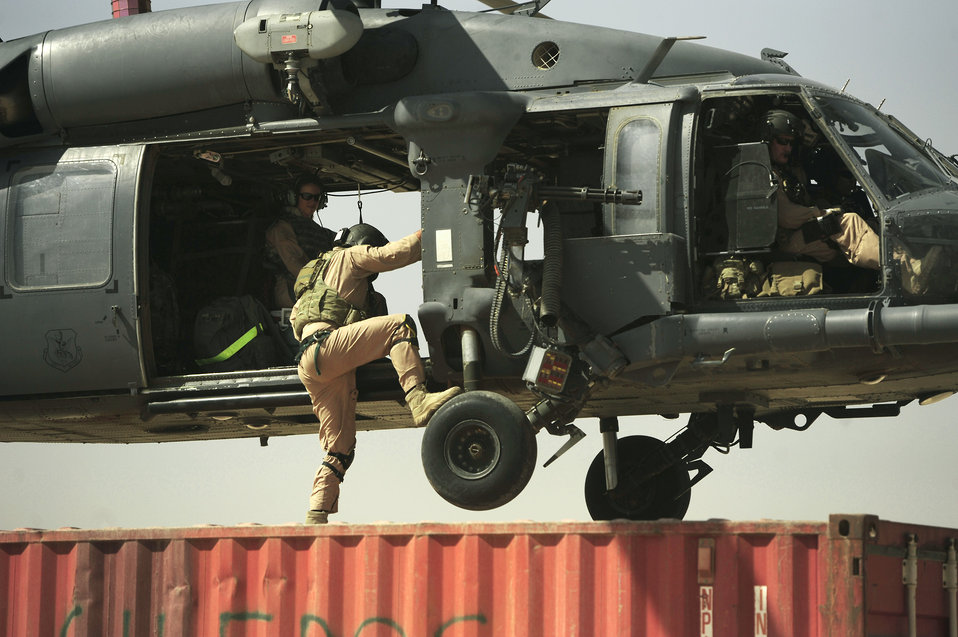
Don't go without me

Staff Sgt. Aaron Walton, an HH-60G Pave Hawk flight engineer, climbs into the helicopter departing for a mission July 12, 2010, at Joint Base Balad, Iraq. The Airman is assigned to the 64th Expeditionary Rescue Squadron.